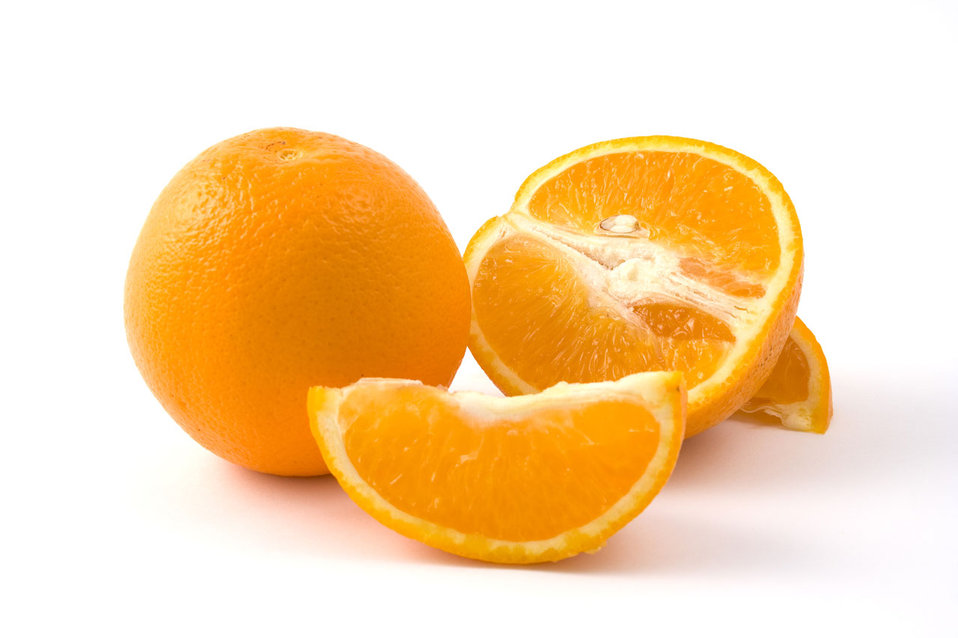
Oranges

Several juicy oranges.